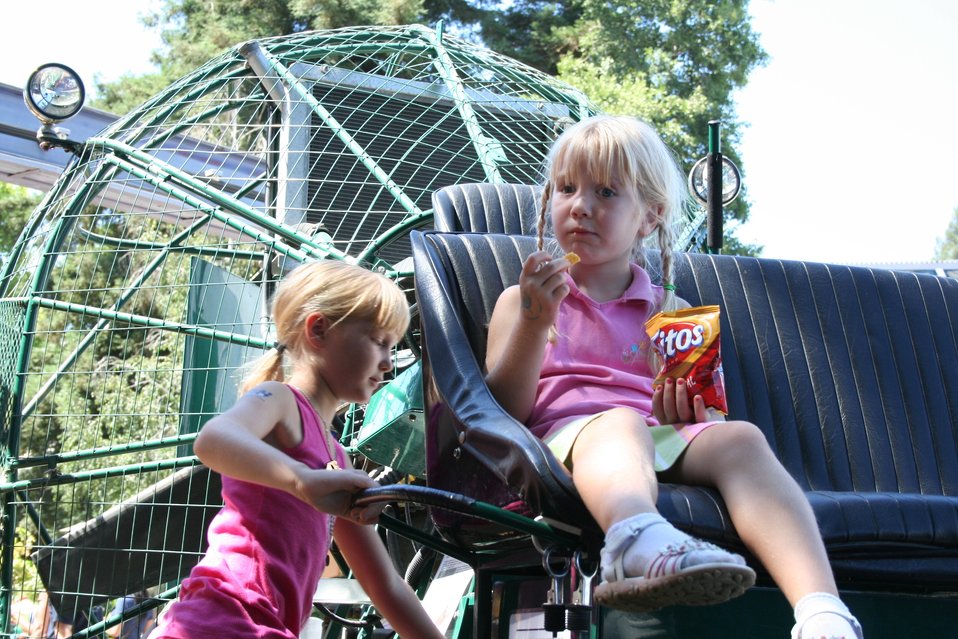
On display at the California State Fair DOI booth was a working air boat from the Don Edwards San Francisco Bay Refuge

For the first time DOI agencies [US Fish & Wildlife Service, Bureau of Reclamation and Bureau of Land Management] joined together to host an America's Great Outdoors Booth at the California State Fair in Sacramento, Calif., July 14 - 31.

The booth included informational panels and displays as well as a children's activity area. Activities: wildlife masks, temporary tattoos, water-cycle bracelets, fish prints, touch boxes, scat bingo, a green-screen, coloring and bird bingo. Five days a week live raptors, snakes and bats were brought in.

About 50,000 children visitied the booth during the 18-day fair.